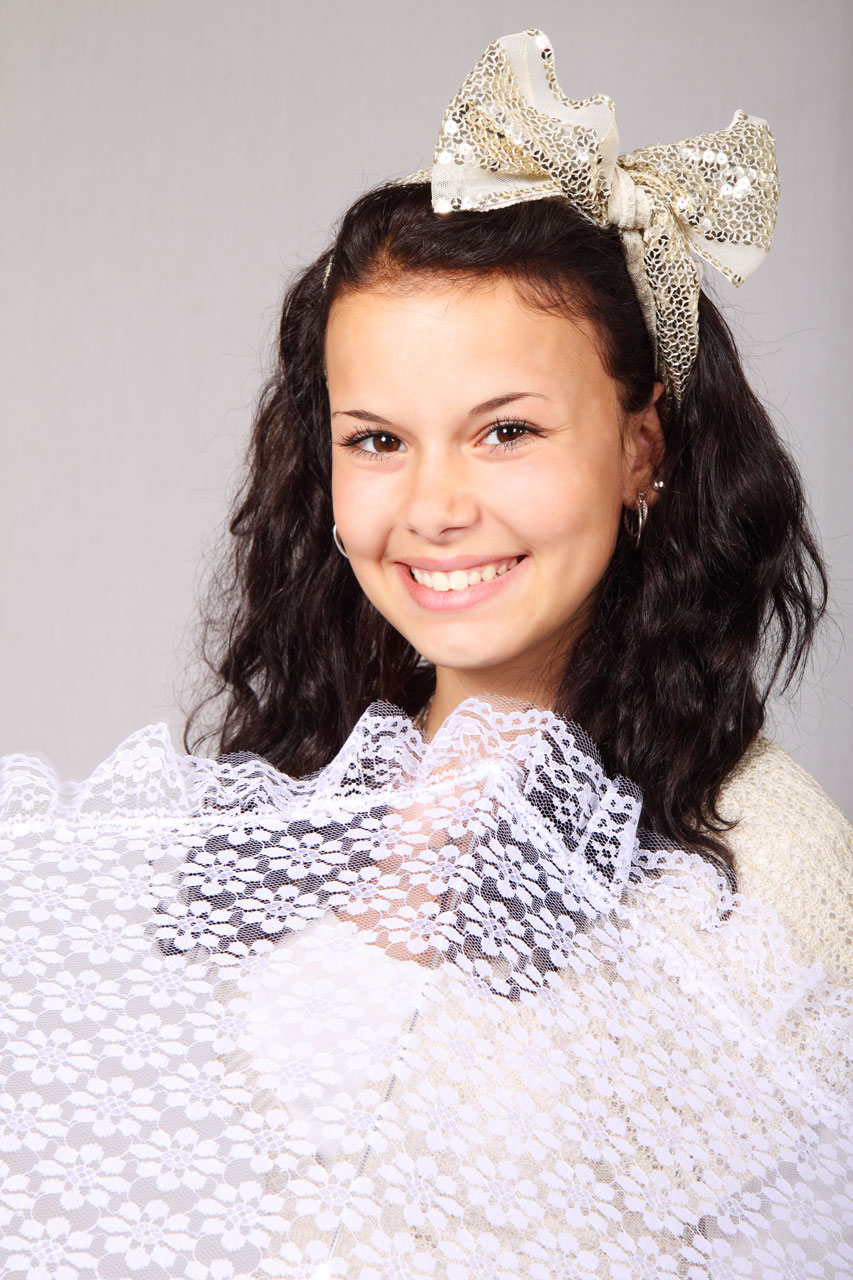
Young woman with umbrella

Young woman smiling with white umbrella and bow in her hair.